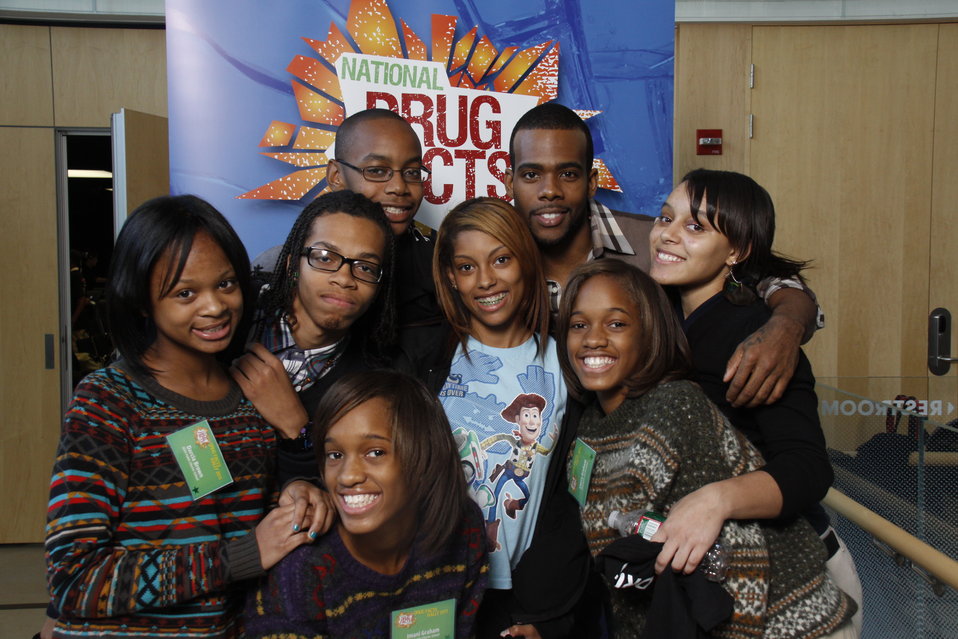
NDFW Mentor Event